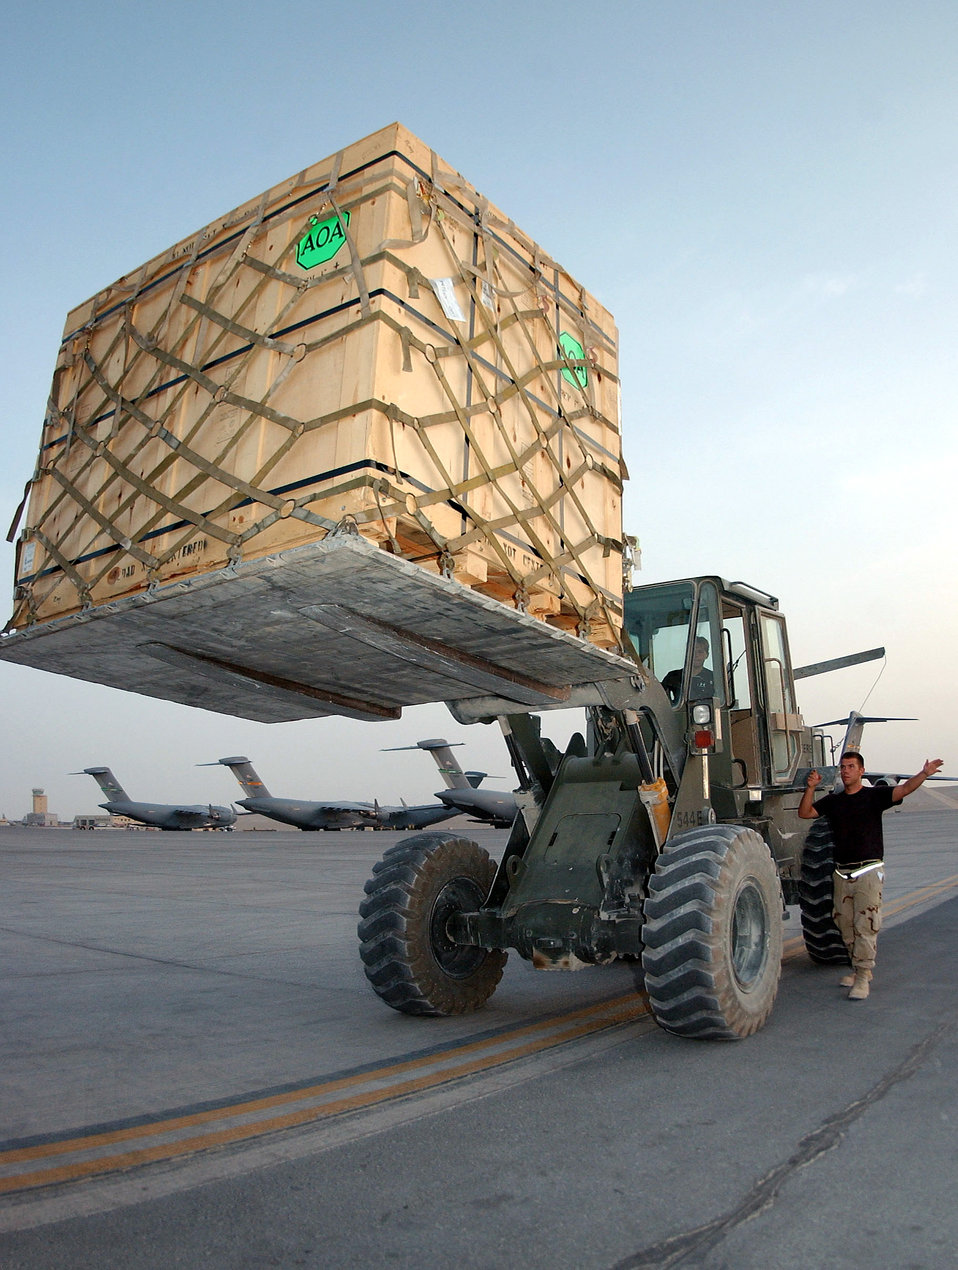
Airmen support Soldiers, Marines with up-armor kits

SOUTHWEST ASIA -- Airman 1st Class Adam Dix guides Senior Airman Heidi Gould as she loads an up-armor kit pallet using a 10-ton loader July 19. The Airmen are assigned to the 8th Expeditionary Air Mobility Squadron at a forward-deployed location.